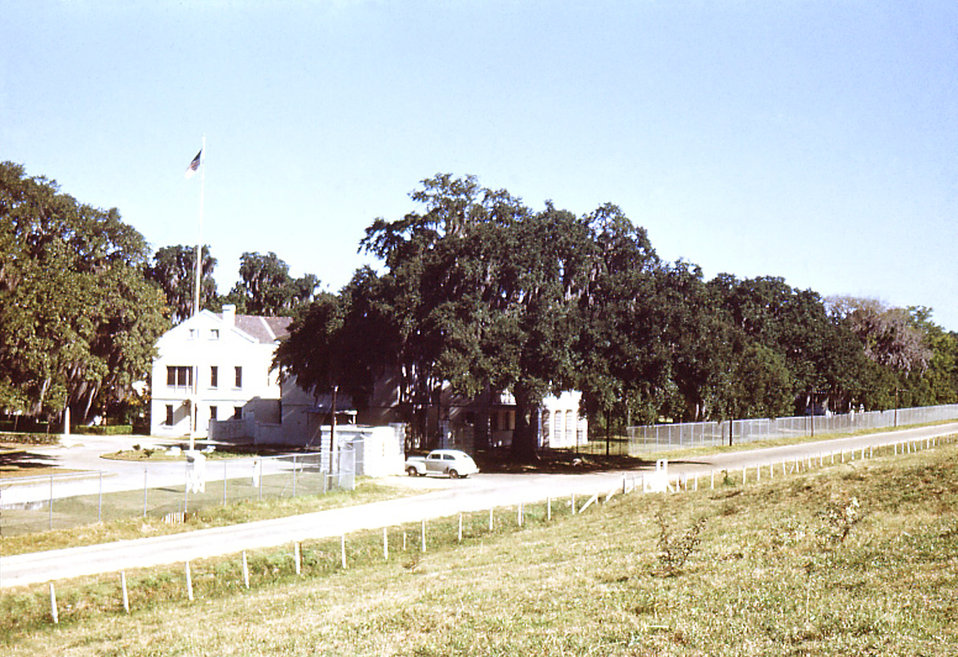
This was the entrance to the Carville, Louisiana Leprosarium where many a Hansen's disease (HD) patient entered, passing through this gate, and remained at the hospital his/her entire life, calling it home, eventually dying there, and subsequently were buried in the hospital's cemetery."Patients of the U.S. Marine Hospital in Carville, Louisiana, produced a set of 35 mm slides around 1950 from which this image was derived. In 2002, a patient's son donated the set, the only one known in existence, to the museum. The father, a patient at Carville for several years, brought these slides home around 1950 to give his family a snapshot of life at the national leprosarium. The act of quarantining patients for leprosy (HD) remained law in the state of Louisiana until 1957."